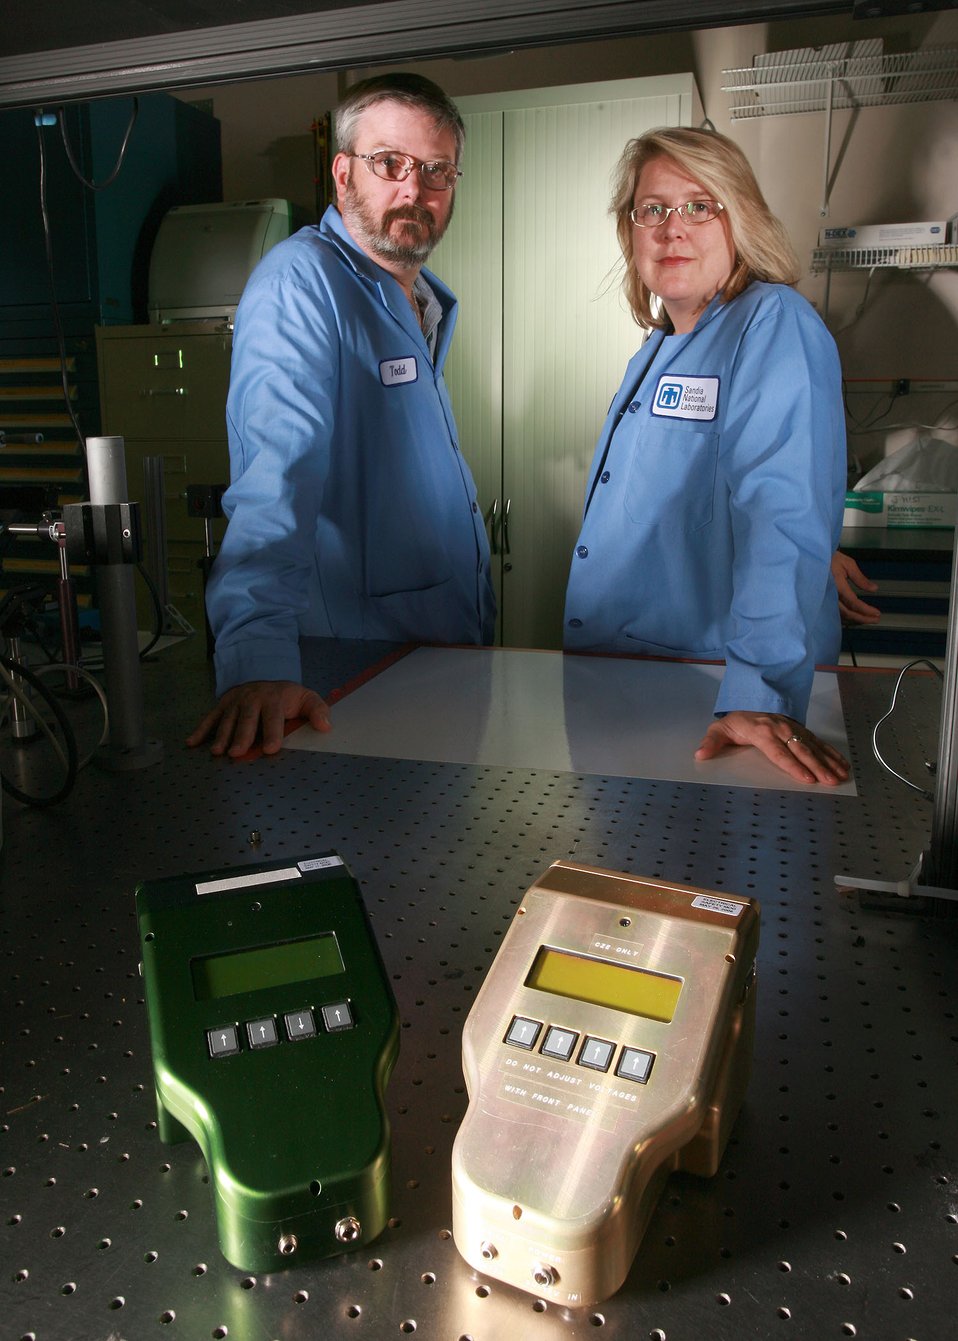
SNL researchers in Livermore, CA are leading an effort, to detect deadly toxins from habs. The project employs laser-induced fluorescence and other separation methods inherent in SNL Chemlab Device.

At SNL, a grant was awarded to develop a technology that can successfully detect deadly toxins from harmful algal blooms(habs). The dense patches or blooms that sometimes accumulate near the surface of the water can produce potent neurotoxins that are transferred through the food chain, accumulating in zooplantkton and shellfish, eventually harming or even killing marine mammals and humans that consume tainted shellfish. The research will focus on enhancing the early warning capability of detection and is expected to lay the ground work for the development of a reliable, cost-effective prototype to simultaneously analyze multiple hab toxins in phytoplankton and/or shellfish in the field. The goal is to develop small, lightweight devices that could be fielded by oceanographers and marine biologists as part of their regular monitoring systems.